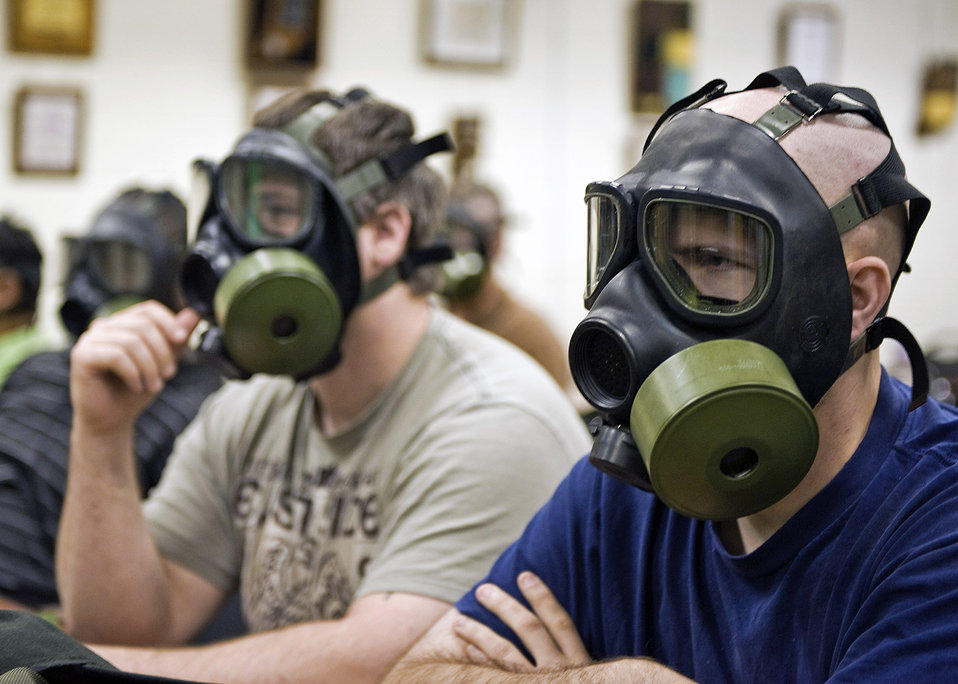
Training prepares civilian employees for deployment

Defense Department civilians and contractors, part of the civilian expeditionary work force, learn how to wear an Army gas mask and receive a class in chemical, biological and radiological warfare June 29, 2010, at the Regional Training Institute at Camp Atterbury Joint Maneuver Training Center in Indiana.